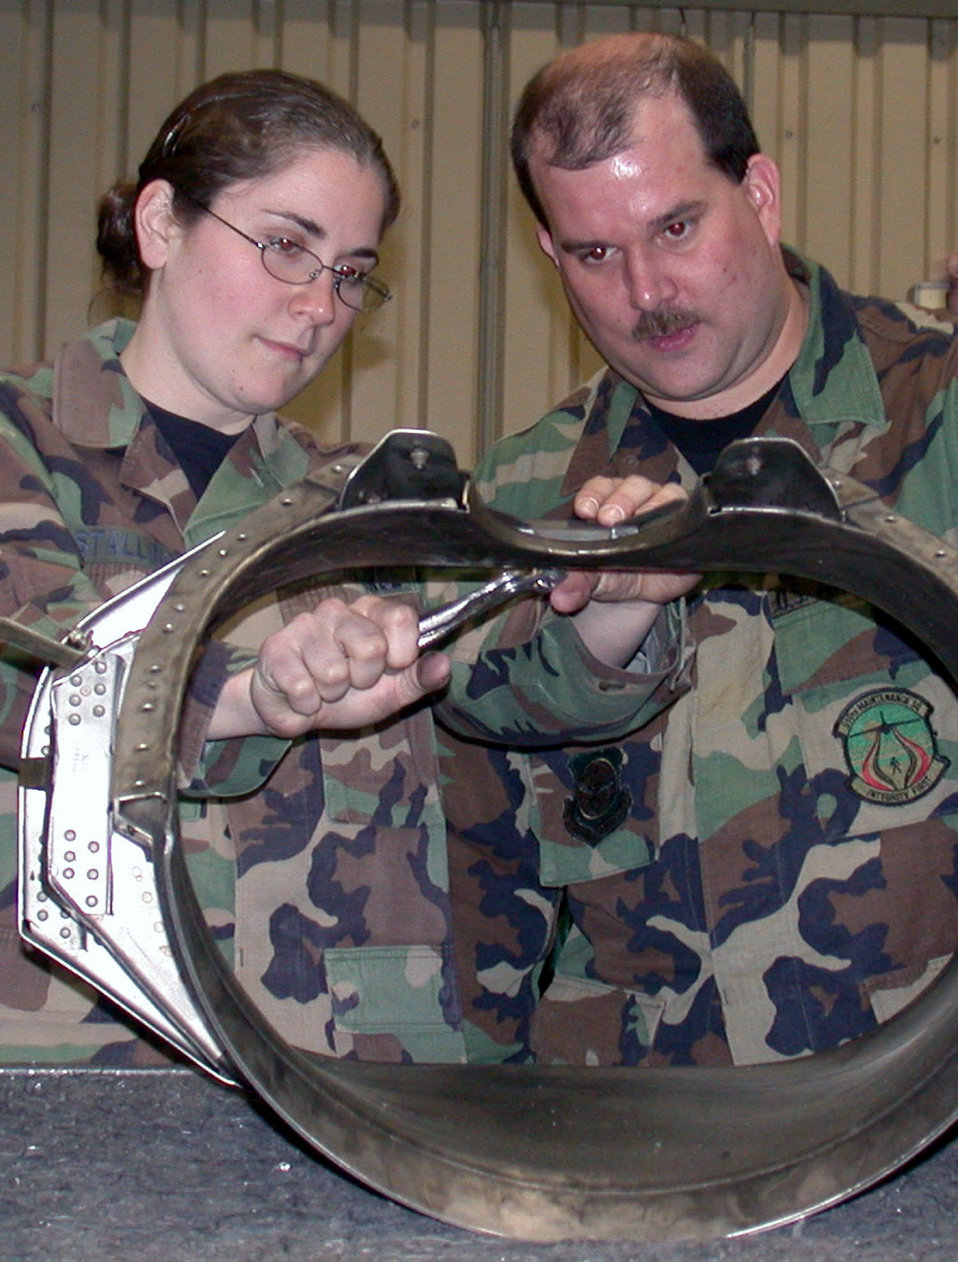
Riveting work

RAMSTEIN AIR BASE, Germany -- Senior Airman Sarah Stallings rivets an inlet ring for a C-130 Hercules aircraft while Tech. Sgt. Scott Obermiyer watches. Stallings is assigned to the 86th Maintenance Squadron. Obermiyer is from the 910th Airlift Wing and assigned to the 38th Airlift Squadron (Provisional) while here.